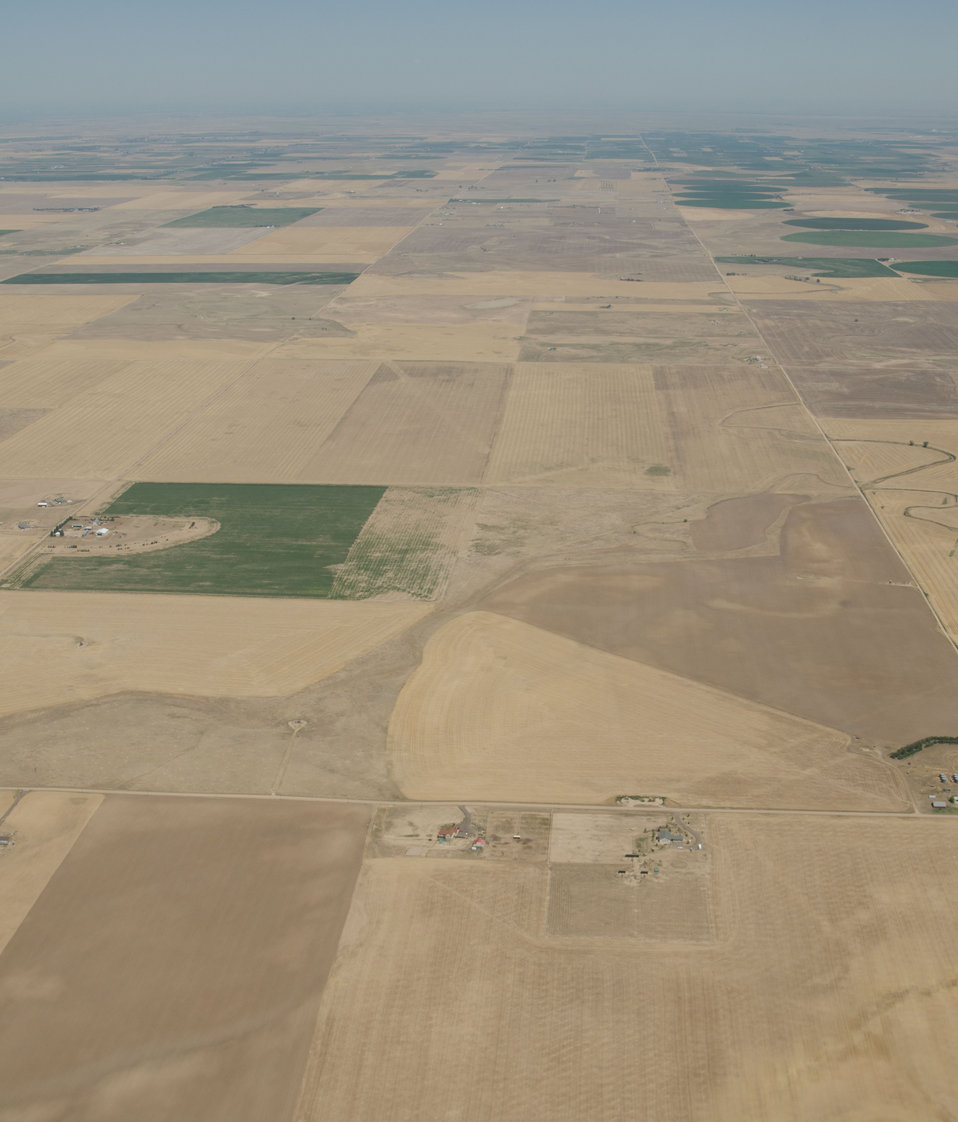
Aerial views of drought affected Colorado farm lands, 76 miles east of Denver, Colorado on Saturday, July 21, 2012.